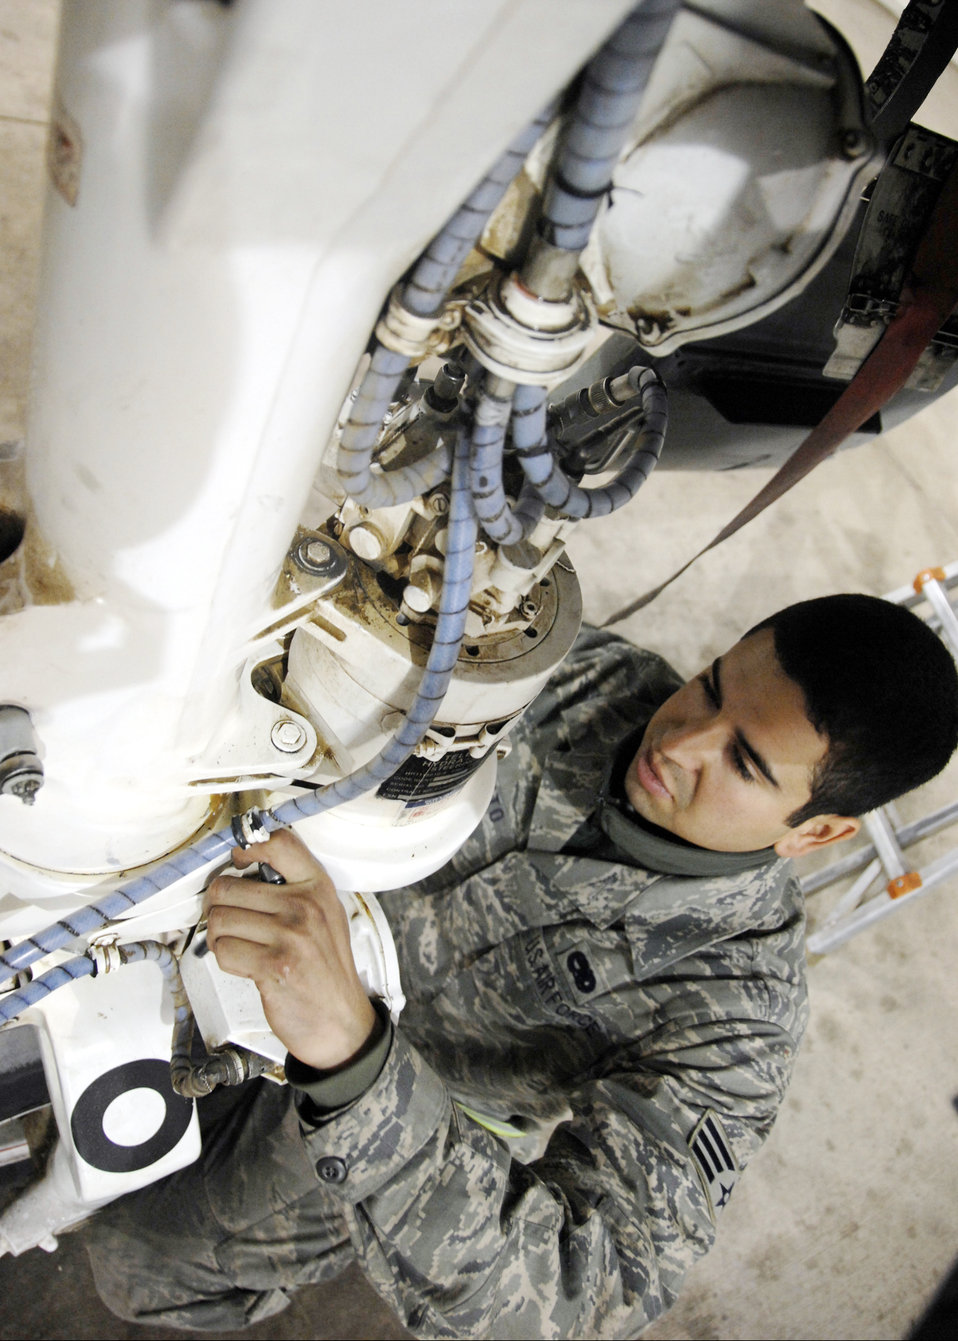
Maintainers keep aircraft soaring

Senior Airman Julio Morato adjusts the taxi light wire harness attached to the nose wheel steering unit cover Dec. 10, 2009, at Kandahar Airfield, Afghanistan. Airman Morato is a 451st Expeditionary Maintenance Squadron maintenance flight crew chief.